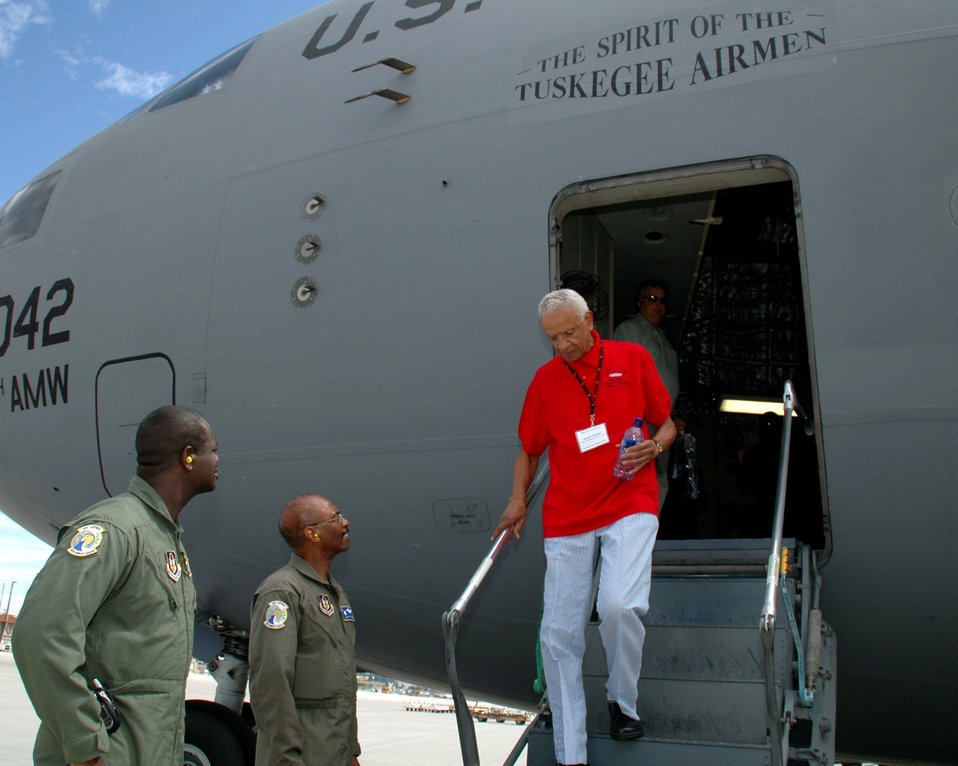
History comes full circle for black aviators

Master Sgt. Terry Grant (left) and Senior Master Sgt. Furman Beckwith thank Donald Jackson, an original Tuskegee Airman, for flying with them on the C-17 Globemaster III named